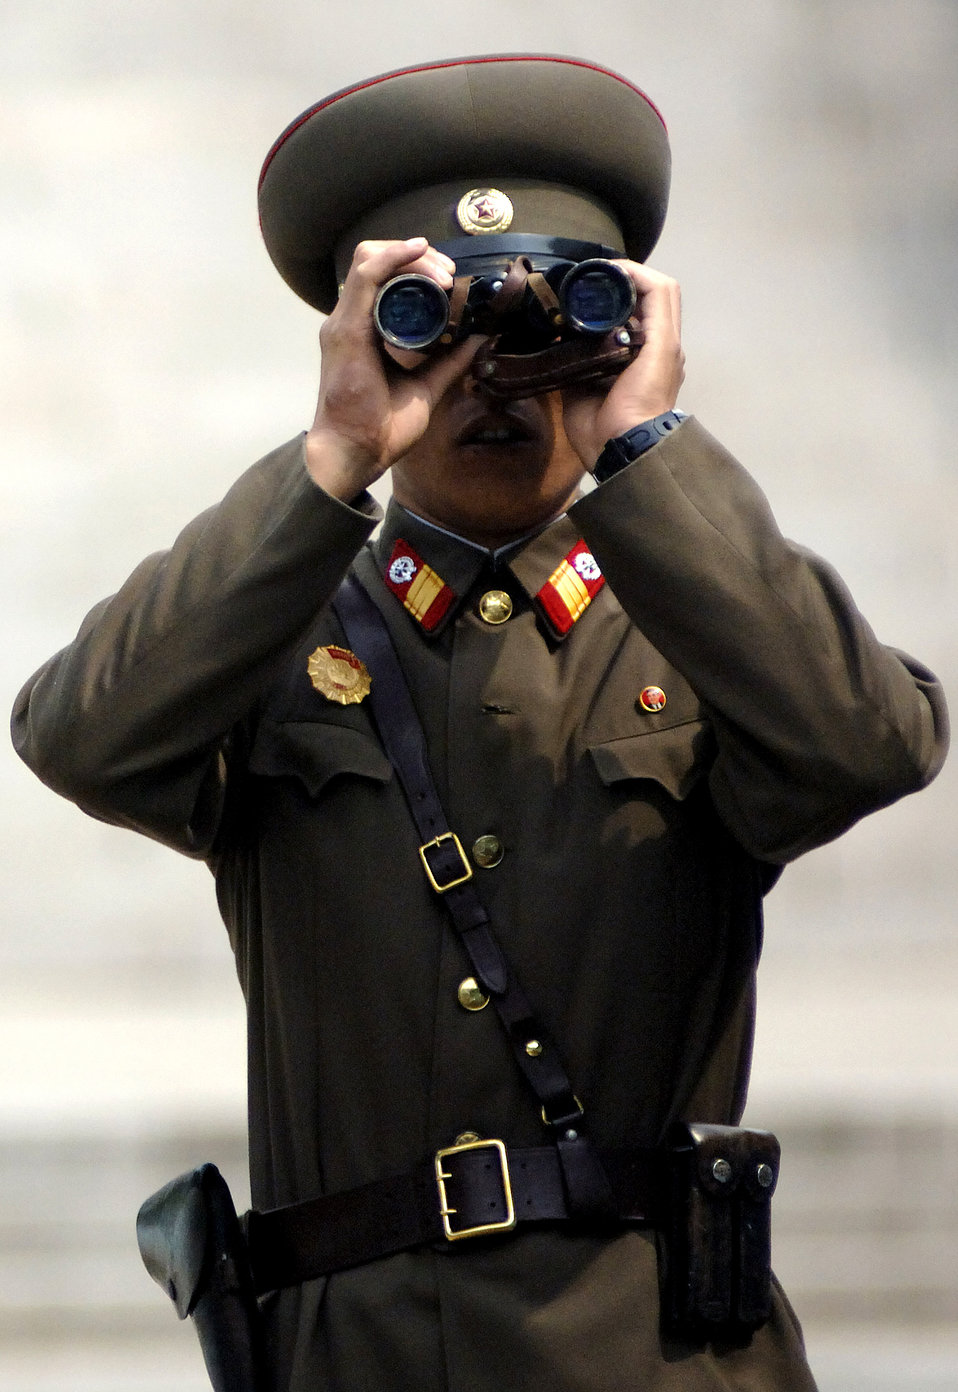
Korean War veterans leading different lives reunite

A North Korean military policeman watches visitors inside the Korean Demilitarized Zone during a Sept. 13 tour held to honor Korean War veterans in Panmunjeom, South Korea. The joint security area is the only place where North and South Korea connect. Air Force Korean War veterans visited South Korea during a weeklong tour in observance of the Air Force's 60th Anniversary.